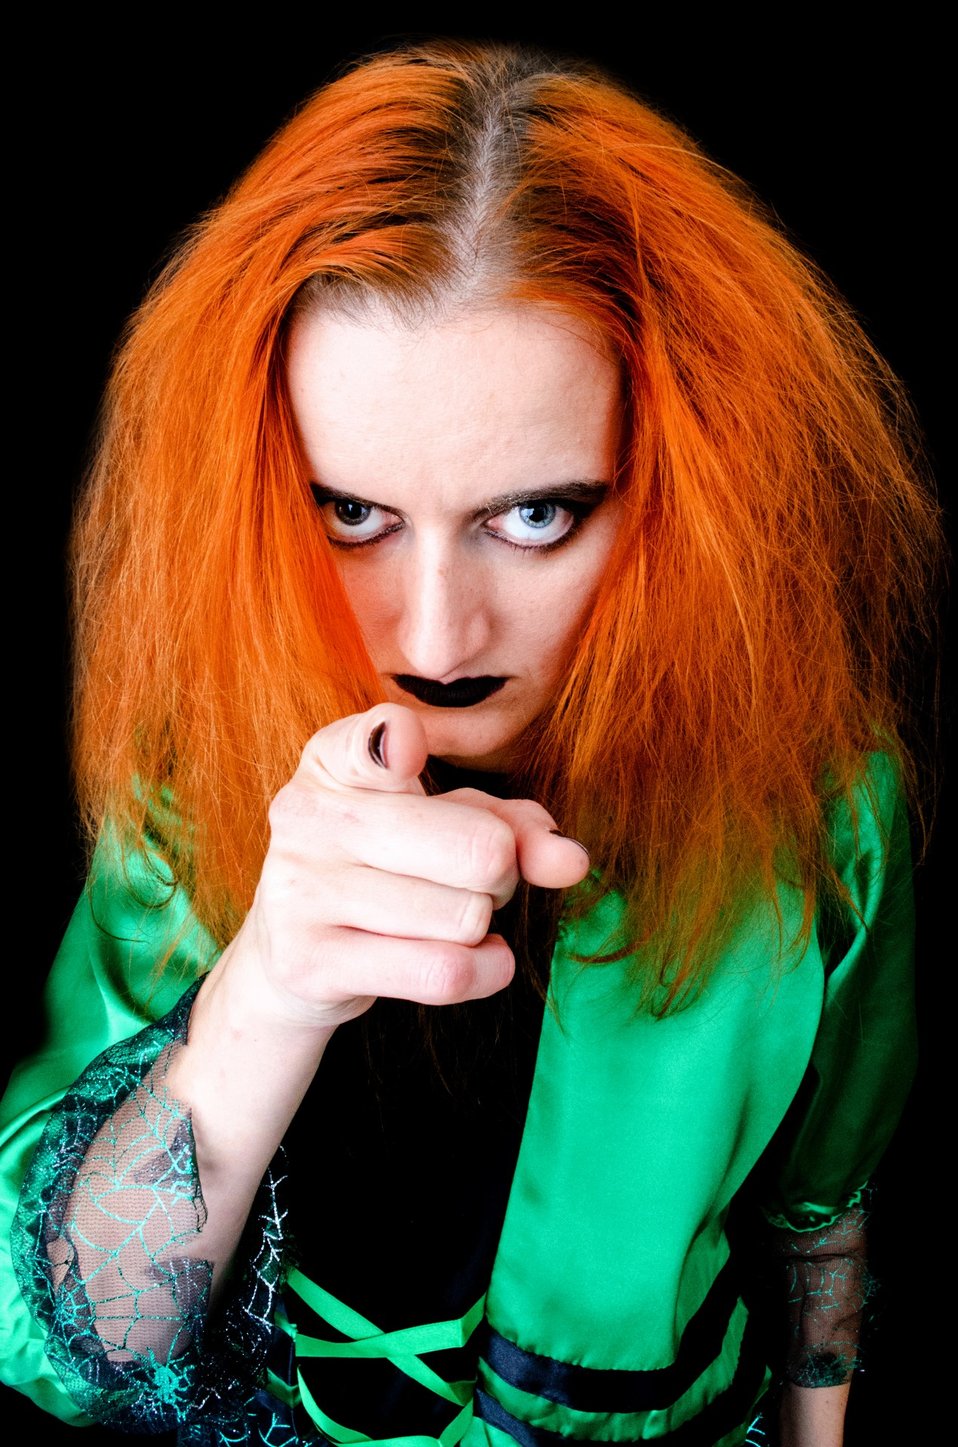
Halloween witch.